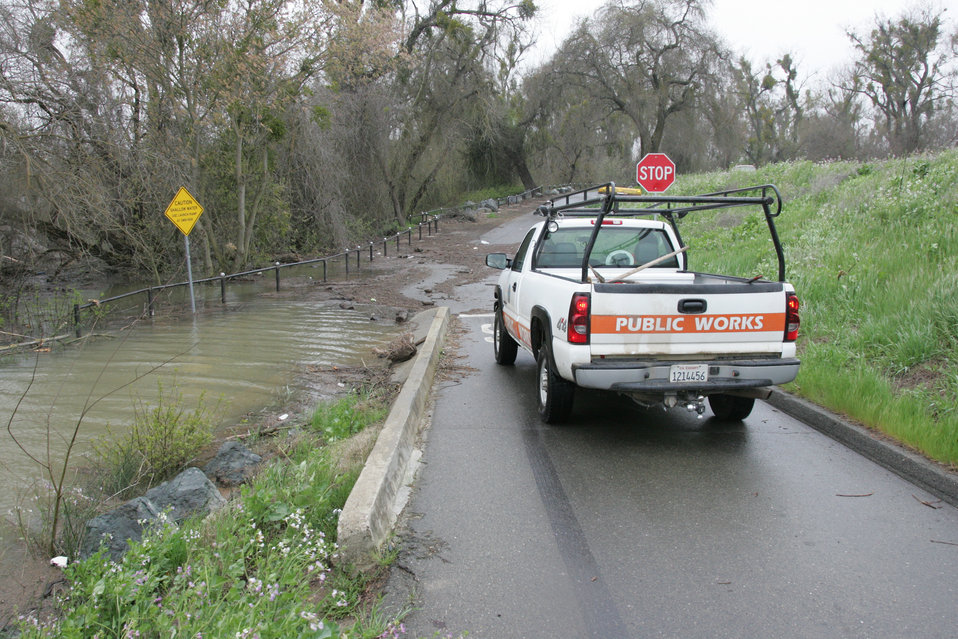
YUBA COUNTY, Calif. (March 24, 2001) --- A Sutter County Public Works crew view the high water levels on the Feather River near the recently completed setback levee at the Star Bend boat ramp in the Plumas Lake area here March 18. The U. S. Army Corps of Engineers Sacramento District is monitoring flood control projects in the Sacramento region as a series of rainstorms continue to heavily hit the northern California region. Construction of the Feather River setback levee began in 2008. It was completed in October 2009 by the Sacramento District, the Three Rivers Levee Improvement Authority and Teichert Construction. Levee maintenance and repair is the responsibility of local agencies. The Sacramento District continues to coordinate with the California Department of Water Resources and is ready to respond to flood emergencies if the state requests federal assistance.